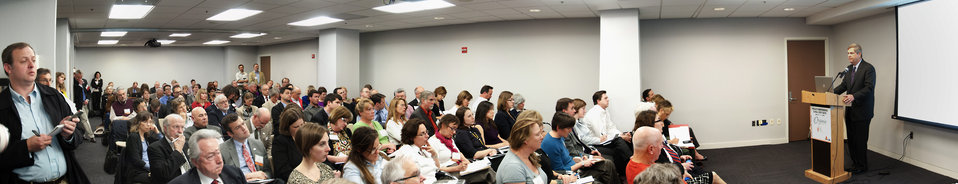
(Virtual panorama) U.S. Department of Agriculture Secretary Tom Vilsack spoke at the Organic Trade Association’s, 2011 Policy Conference at the Hall of States, on Wednesday, April 6, 2011, at the Hall of States, in Washington, DC. USDA photo illustration by Lance Cheung.